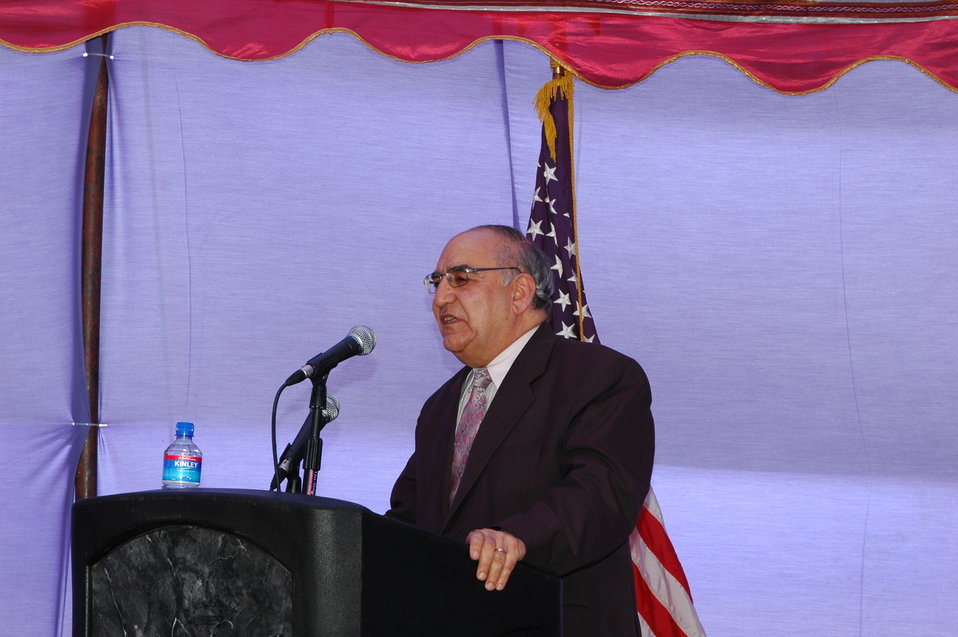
105 MW Tarakhil Power Plant Handover